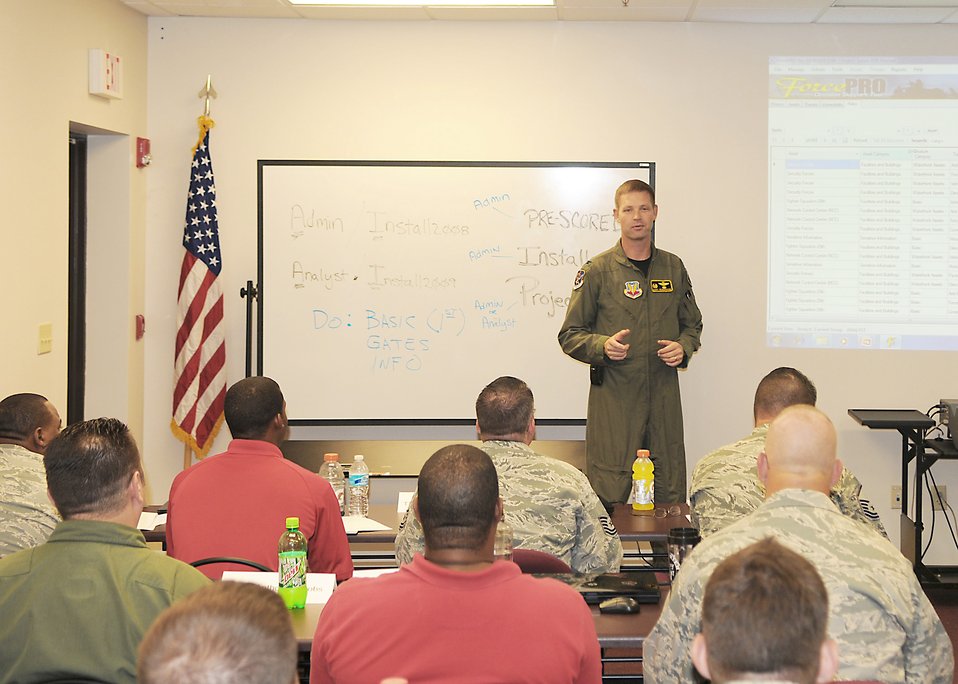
Integrated defense software

Col. Gary Henderson, the 23rd Wing commander at Moody Air Force Base, Ga., speaks to students on their last day of the Integrated Defense Risk Management Process and ForcePRO workshop July 30, 2010. The training is designed to teach students risk management principles through a new software program.